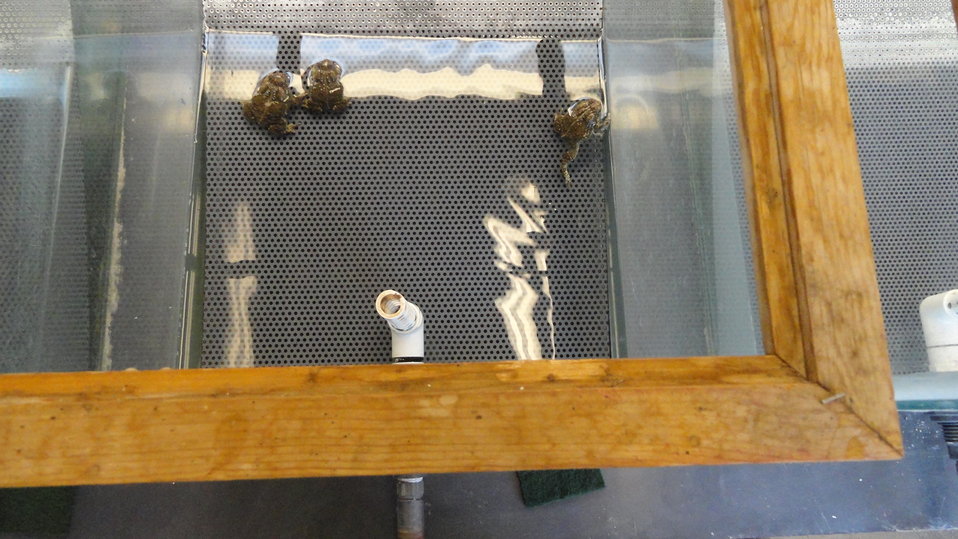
Visiting Saratoga National Fish Hatchery

In April of 2014, regional office employees visited Saratoga National Fish Hatchery to learn more about its efforts towards recovering the Wyoming toad (Bufo baxteri).

The hatchery adopted a unique role in becoming the first unit in the National Fish Hatchery System to become involved in rearing endangered amphibians. The Wyoming toad was a common sight on areas of the Laramie Plains, Albany County, Wyoming, into the early 1970s but the species' populations crashed in the mid-1970s. The Wyoming toad was listed as endangered by the U.S. Fish & Wildlife Service in January 1984. Found only in southwestern Wyoming, the Wyoming toad is considered the most endangered amphibian in North America. The hatchery maintains a captive population for breeding, rearing, and refugia, and the offspring from this program will be used for reintroduction efforts.